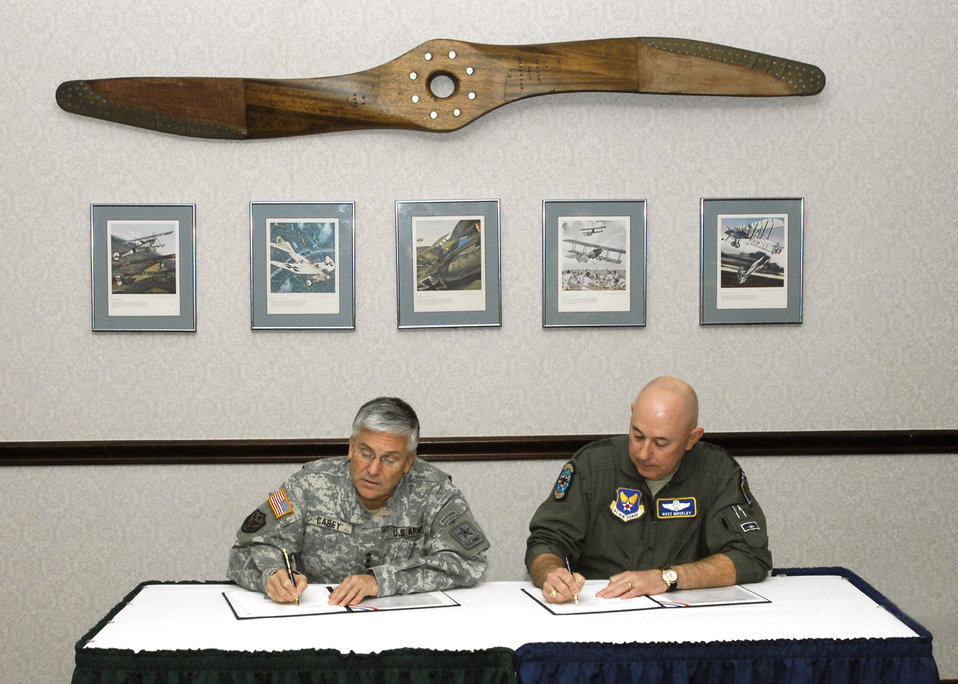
Army, Air Force leaders discuss interoperability

Army Chief of Staff Gen. George W. Casey Jr. (left), and Air Force Chief of Staff Gen. T. Michael Moseley sign a memorandum of agreement during the